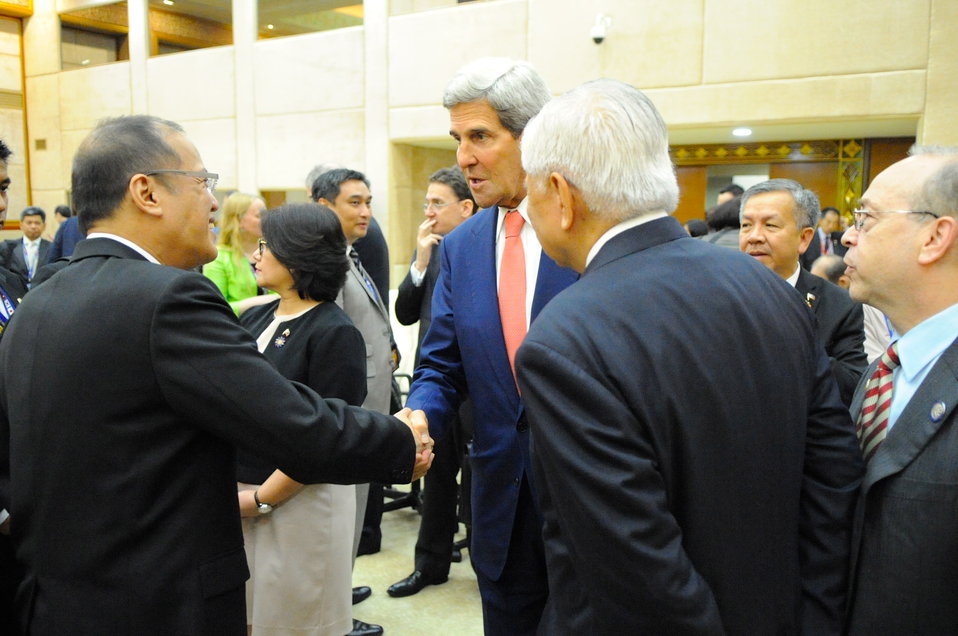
Secretary Kerry Meets With Philippine President Aquino of the Philippines

U.S. Secretary of State John Kerry shakes hands with President Benigno S. Aquino of the Philippines on October 10, 2013, in Bandar Seri Begawan, Brunei, after apologizing for postponing his visit to Aquino's country because of an approaching typhoon.